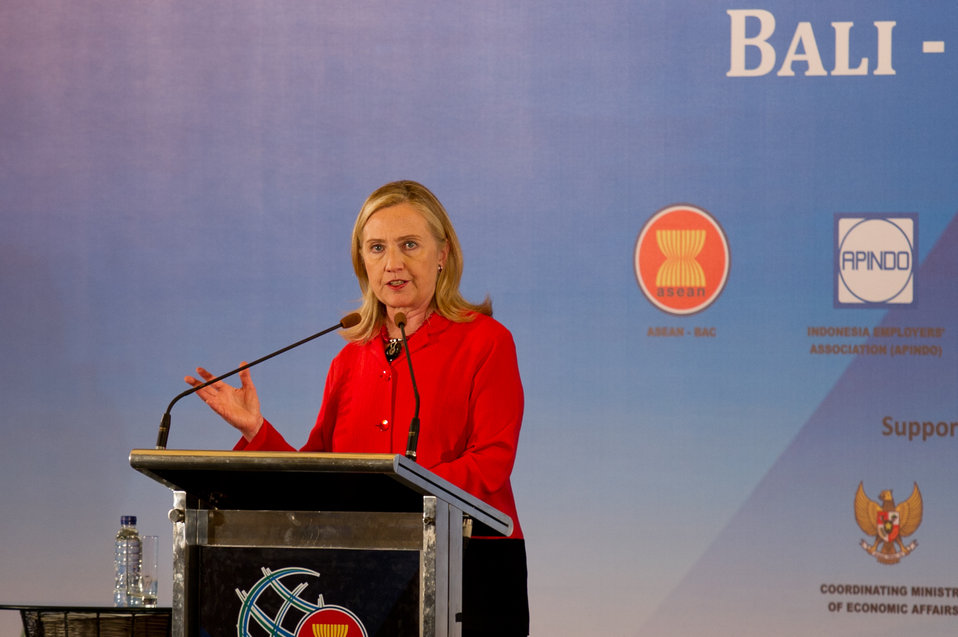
Secretary Clinton Addresses the ASEAN Business Investment Summit

U.S. Secretary of State Hillary Clinton addresses the ASEAN Business Investment Summit in Bali, Indonesia, on November 18, 2011.